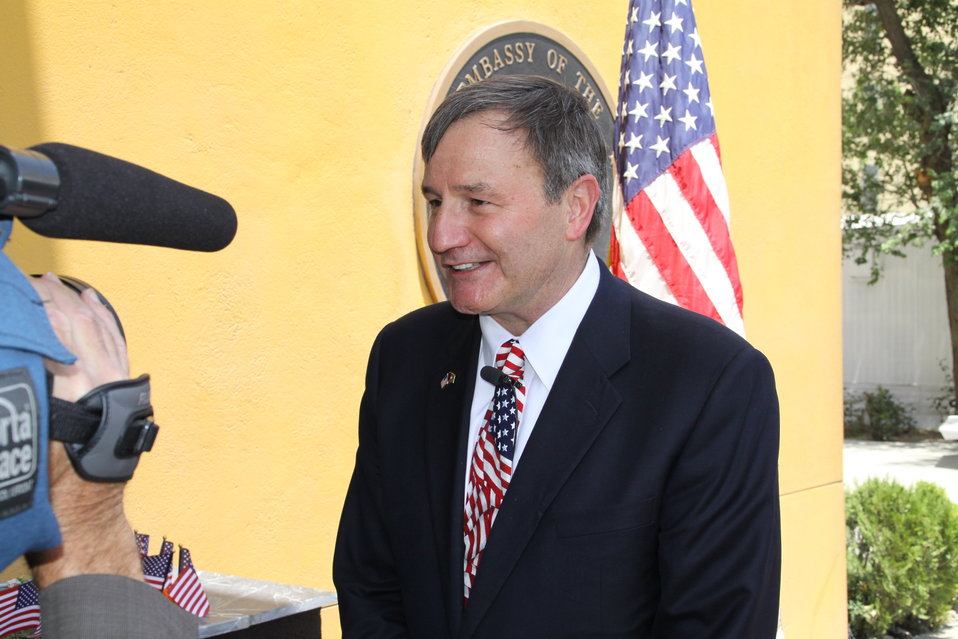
Kabul Official July 4th Celebration